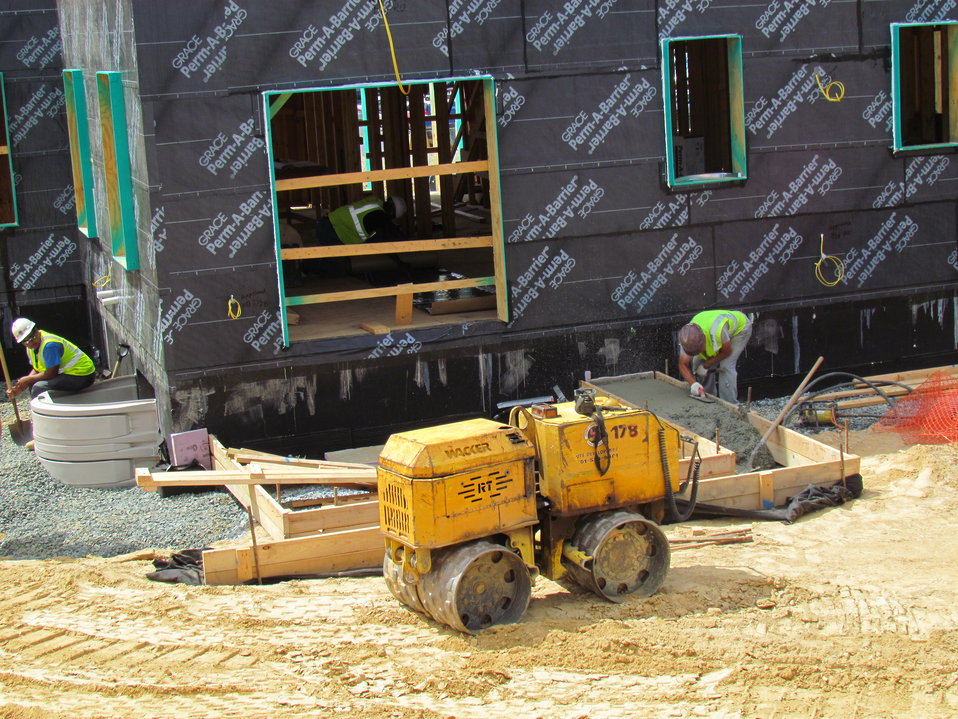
Net-Zero Energy Residential Test Facility - Workman pouring foundation for attached porch on north side of facility.